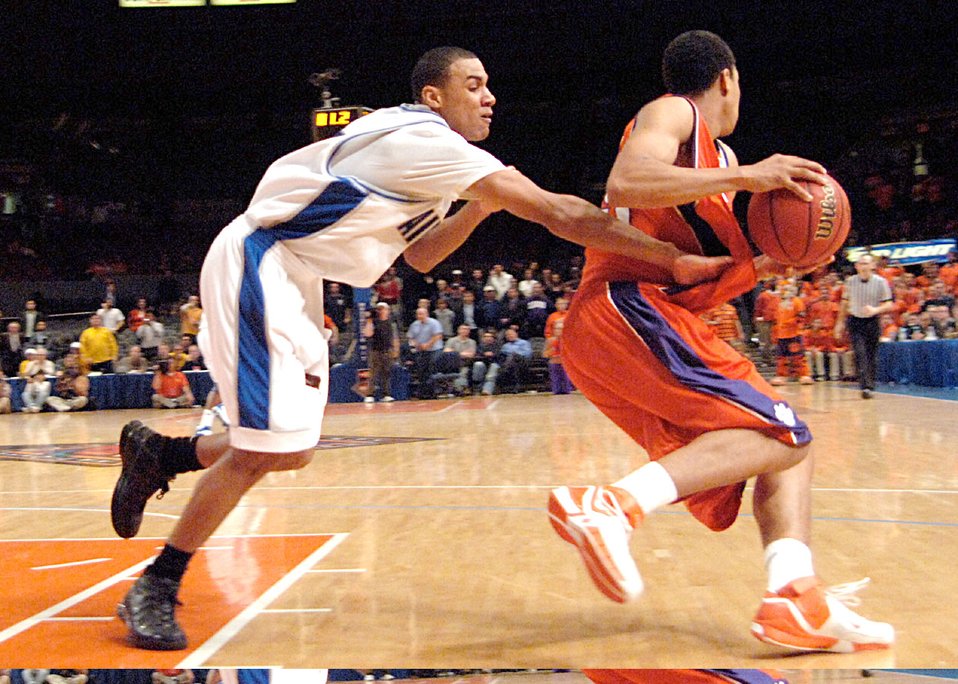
Falcons lose heartbreaker to Clemson in NIT semifinals

Air Force guard Matt McCraw attempts to steal the ball from Clemson forward David Potter during the National Invitation Tournament semifinal game against Clemson March 27 at Madison Square Garden. Clemson survived a rally by the Falcons in the final minutes to win 68-67 and advance to the NIT championship March 29 against West Virginia.